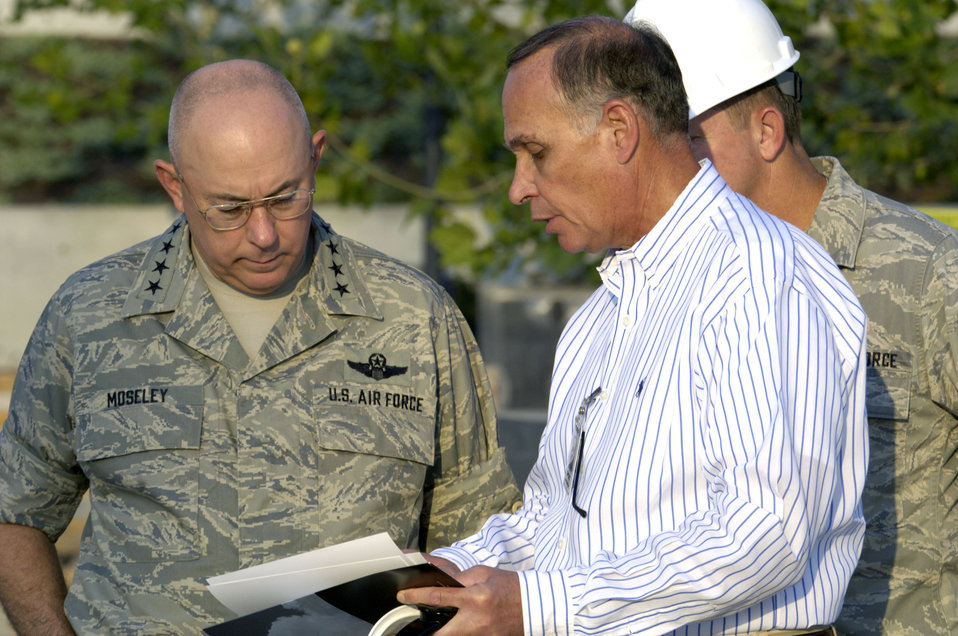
Air Force leaders sign memorial spire

Retired Major Gen. Edward F. Grillo, Jr., Air Force Memorial Foundation president, shows Chief of Staff of the Air Force Gen. T. Michael Moseley and Chief Master Sergeant of the Air Force Rodney J. McKinley the plans of the Air Force Memorial during a visit to the site in Arlington, Va. Aug 3. The memorial is scheduled to be completed on Oct. 14.